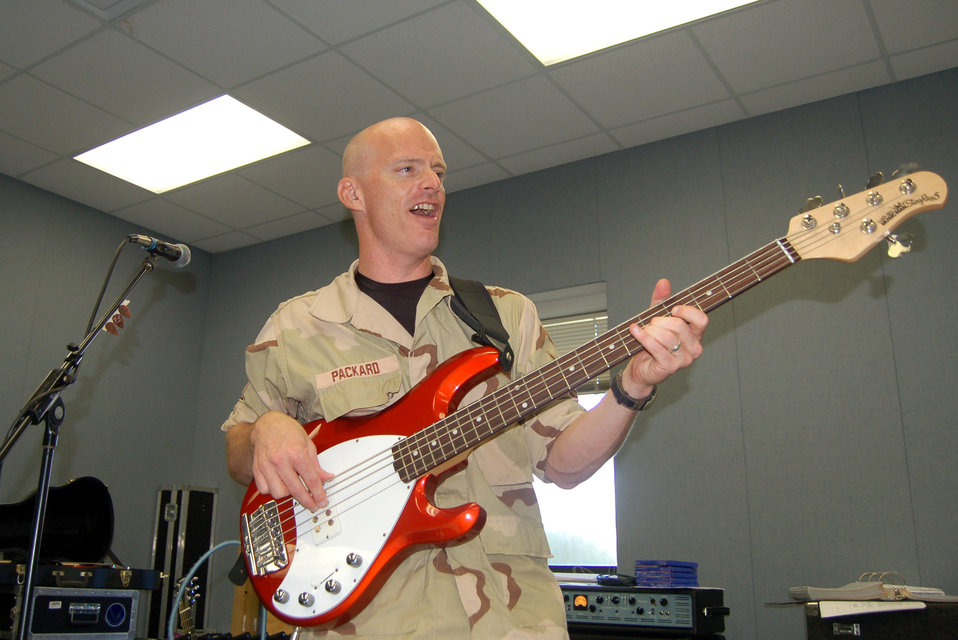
AF band targets forward bases for morale shows

Bass guitarist and vocalist Tech. Sgt. Jonathan Packard rehearses Oct. 4. He is with the Air Force Band of the West's Top Flight rock band at Lackland Air Force Base, Texas. The band will be deploying soon to Southwest Asia.